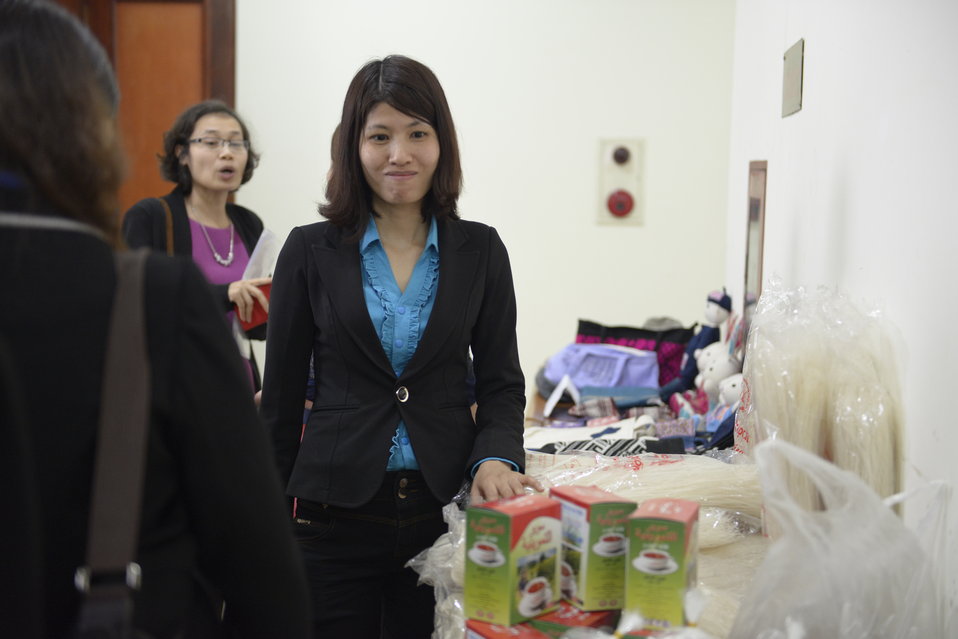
Women entrepreneurs showcases some of the products they produce

Phu Tho, Vietnam. March 1, 2014.